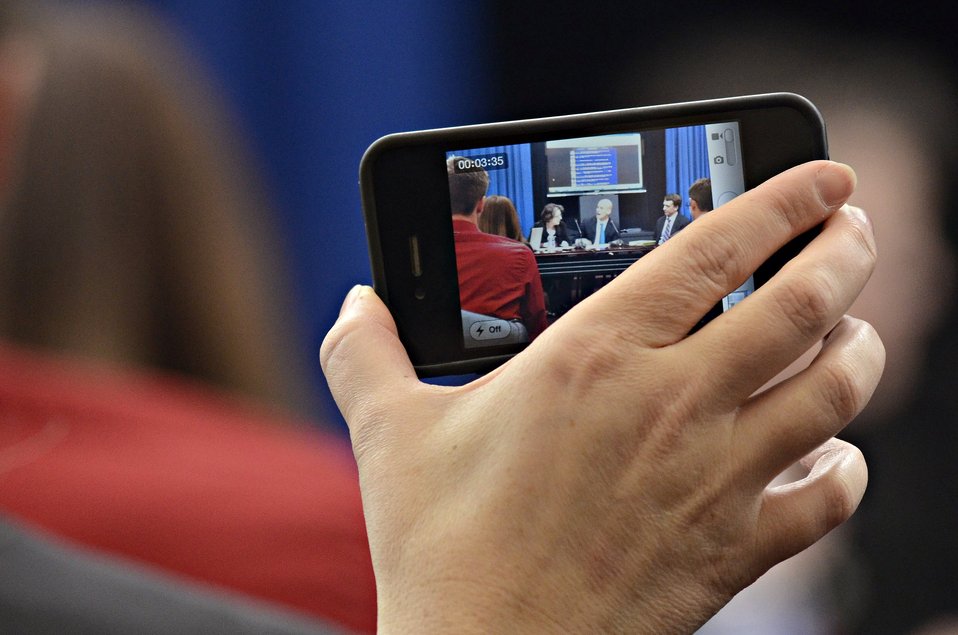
Agriculture Deputy Secretary Kathleen Merrigan (behind table on left), White House Personal Chef and Food Policy Advisor Sam Kass (at table w/blue tie) and White House Office of Public Engagement Director Jon Carson (at table, right) during a Know Your Farmer Compass event that used twitter social media to continue the National Conversation on Local and Regional Food projects and how they offer economic opportunities to local farmers, ranchers and food entrepreneurs. Using the new web-based Know Your Food Compass, the conversation covered many aspects about food, such as infrastructure, stewardship, local meat and poultry, Healthy food access, careers in agriculture and local food knowledge. The virtual conversation took place at the White House, and Twitter was used to expand the conversation worldwide, from Washington, D.C., on Monday, March 5, 2012. Unlike most events where mobile communication devices are asked to be turned off, here it was asked that they remain on allowing people to have social media conversations.